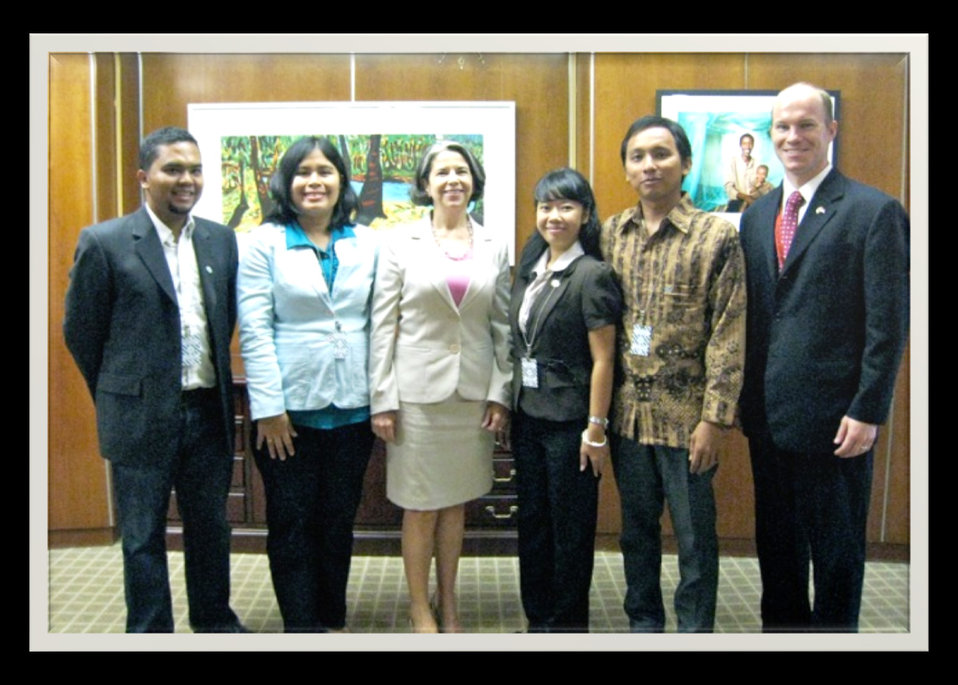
Under Secretary Otero Poses for a Photo With Indonesian New Media Journalists

U.S. Under Secretary of State for Democracy and Global Affairs Maria Otero (center) poses for a photo with Indonesian journalists, (L to R): Enda Nasution, Rita Hutapea, Dita Puspitasari, Putra Nasution, and Educational and Cultural Affairs Program Officer Charlie Kellett at the U.S. Department of State in Washington, D.C., on July 7, 2010.